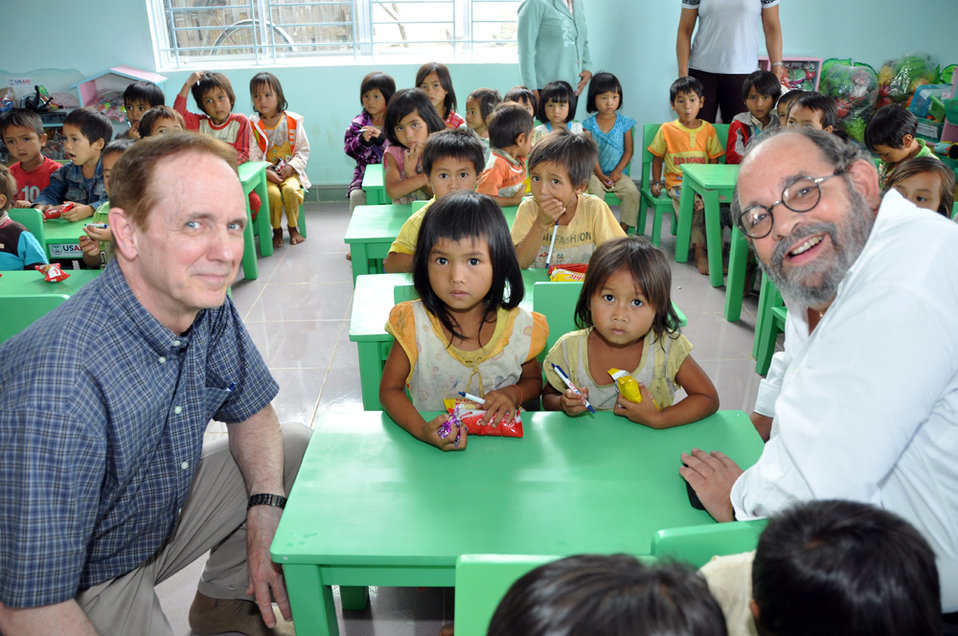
USAID contributes to refurbished pre-schools and teacher training in Vietnam

USAID Mission Director Francis Donovan and General Development Officer Howard Handler meet children in Kon Tum.